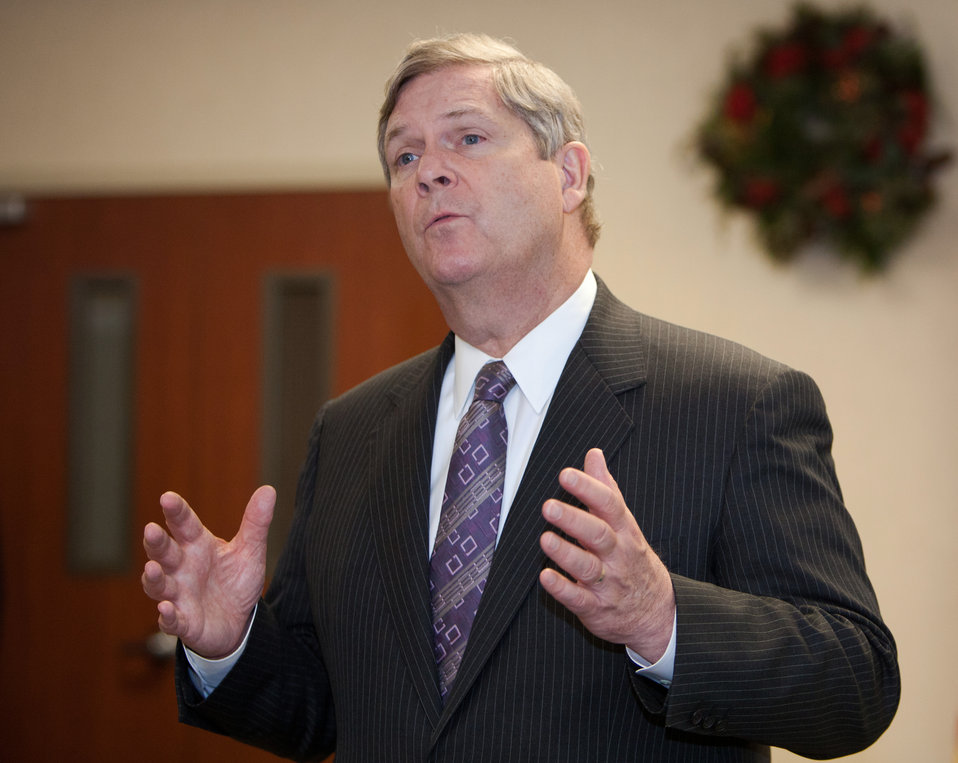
Agriculture Secretary Tom Vilsack speaks with U.S. Department of Agriculture (USDA) employees at the Shasta-Trinity National Forest headquarters in Redding, CA on Dec. 10, 2012.